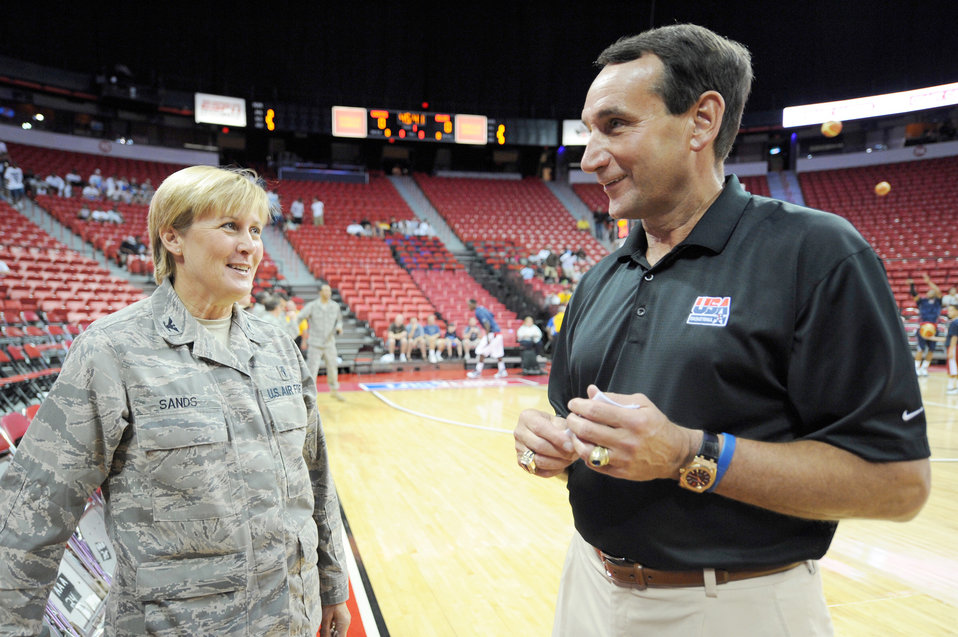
Nellis Airmen honored at USA Basketball exhibition

Col. Claudia Sands, the 99th Medical Operations Squadron commander, shares a laugh with USA Basketball head coach Mike Krzyzewski during an exhibition game at the Thomas and Mack Center July 25 in Las Vegas. The USA Basketball Showcase in Las Vegas is the first training camp and exhibition game leading up to the 2012 Olympic Games.